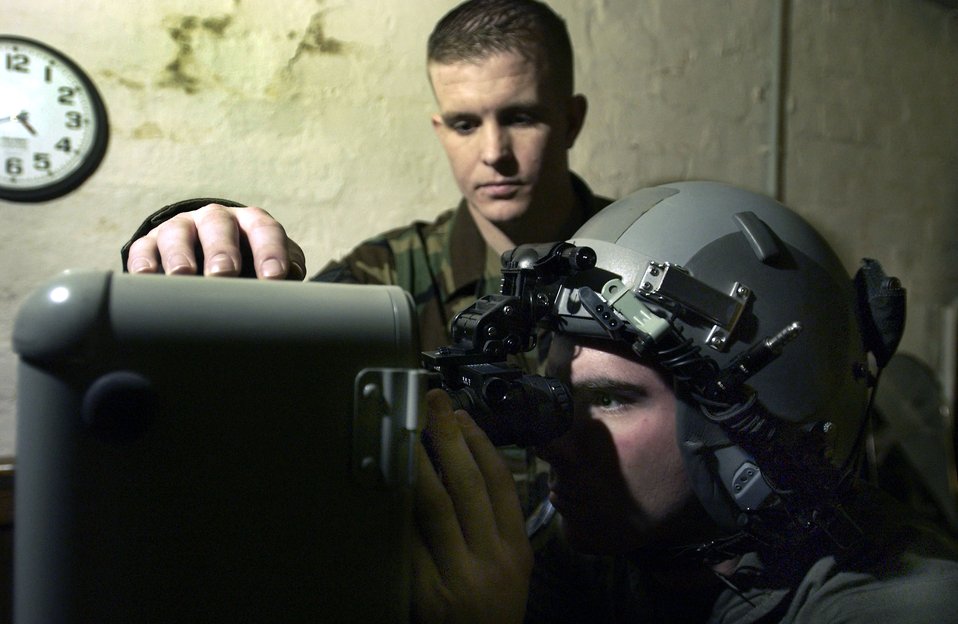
Testing out night vision

RHEIN-MAIN AIR BASE, Germany -- Senior Airman Luke Mailander helps Airman 1st Class Dan Carbon try his night-vision goggles during his preflight equipment check. Airman Carbon is a C-17 Globemaster III loadmaster with the 817th Expeditionary Airlift Squadron and deployed from Charleston AFB, S.C. Airman Mailander is an aircrew lift support technician with the 817th EAS and deployed from Travis Air Force Base, Calif.